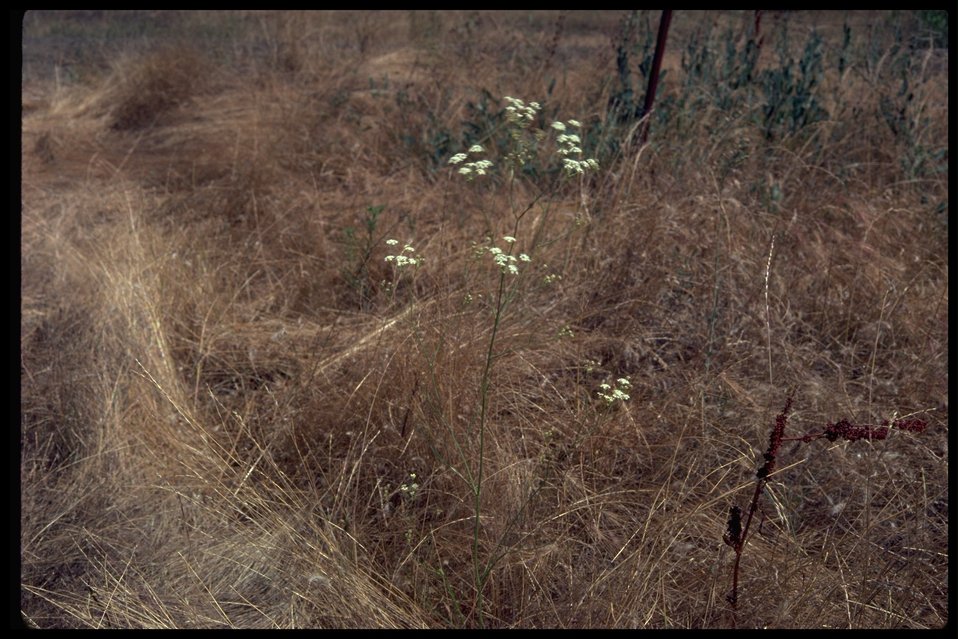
Perideridia erythrorhiza, or commonly known as the Red Root Yampah.